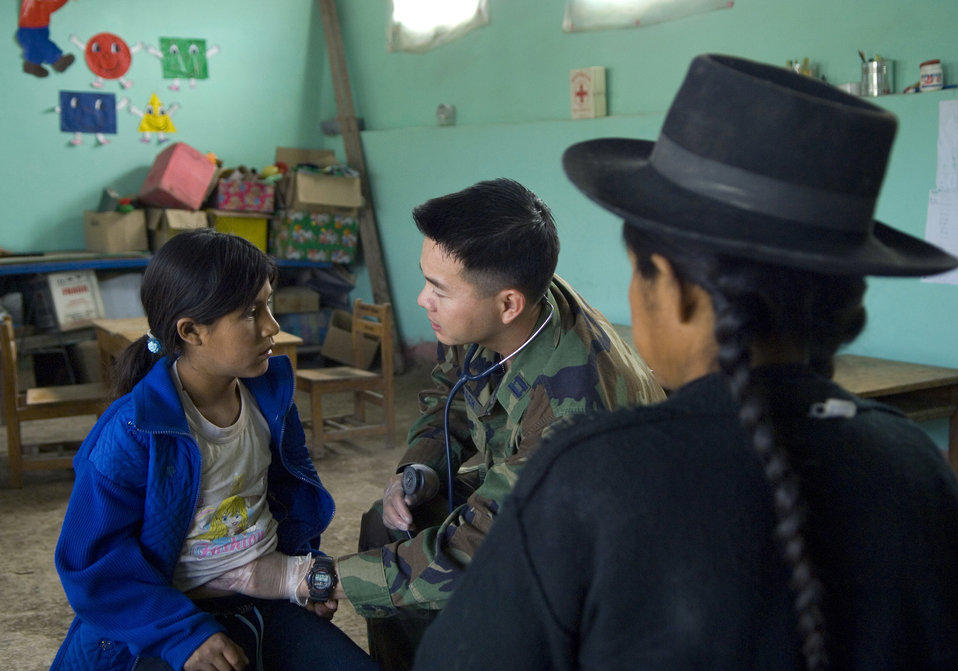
Does it hurt here?

Capt. Truong Quach performs a general medical evaluation on a Peruvian girl June 22 during free medical exams inside a schoolhouse in Ayacucho, Peru. Captain Quach is deployed from the 452nd Medical Squadron at March Air Reserve Base, Calif.